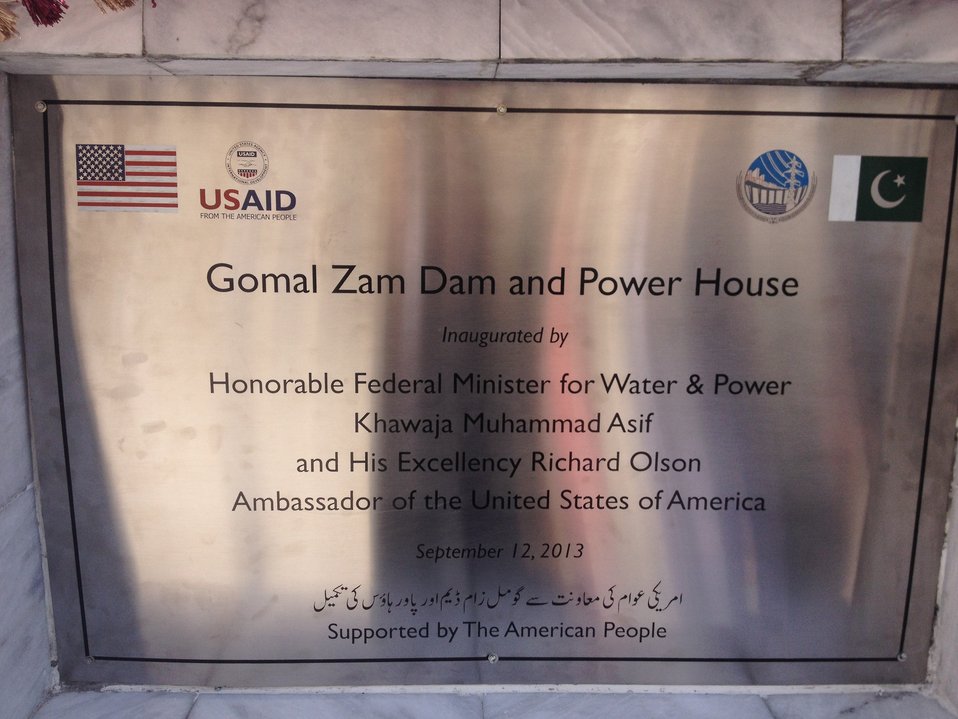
Gomal Zam 07